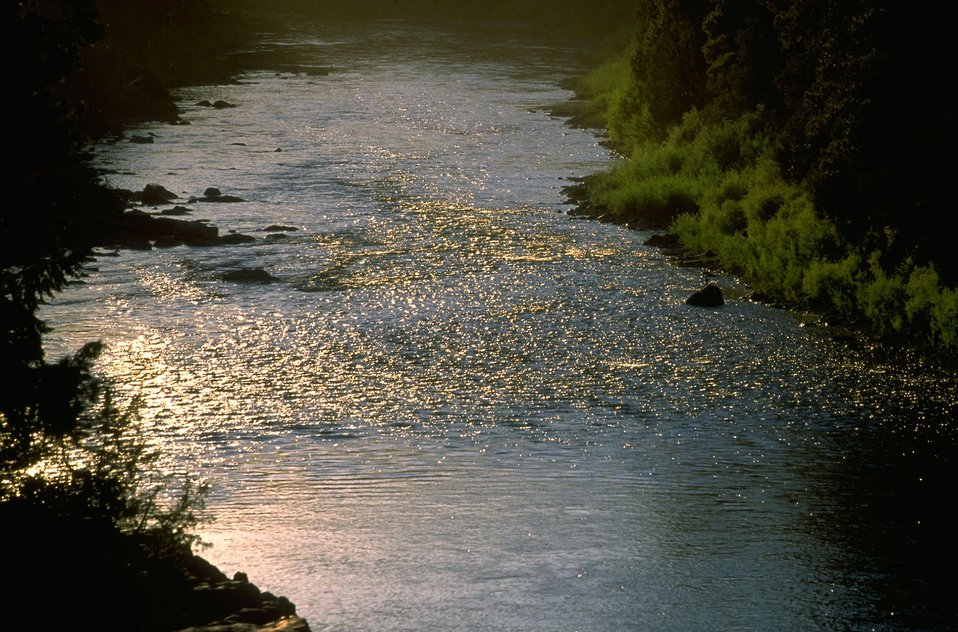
Early morning on the Blackfoot River